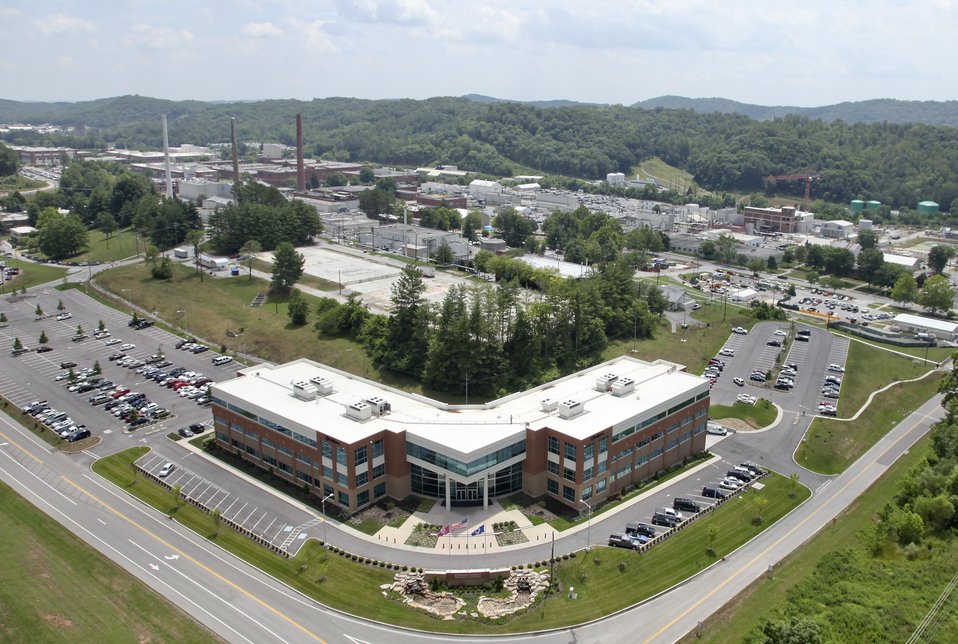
Science and Technology Park - room for expansion

The Science and Technology Park will have room for expansion once the 2000 Complex’s slabs are removed and the 19-acre area is remediated.